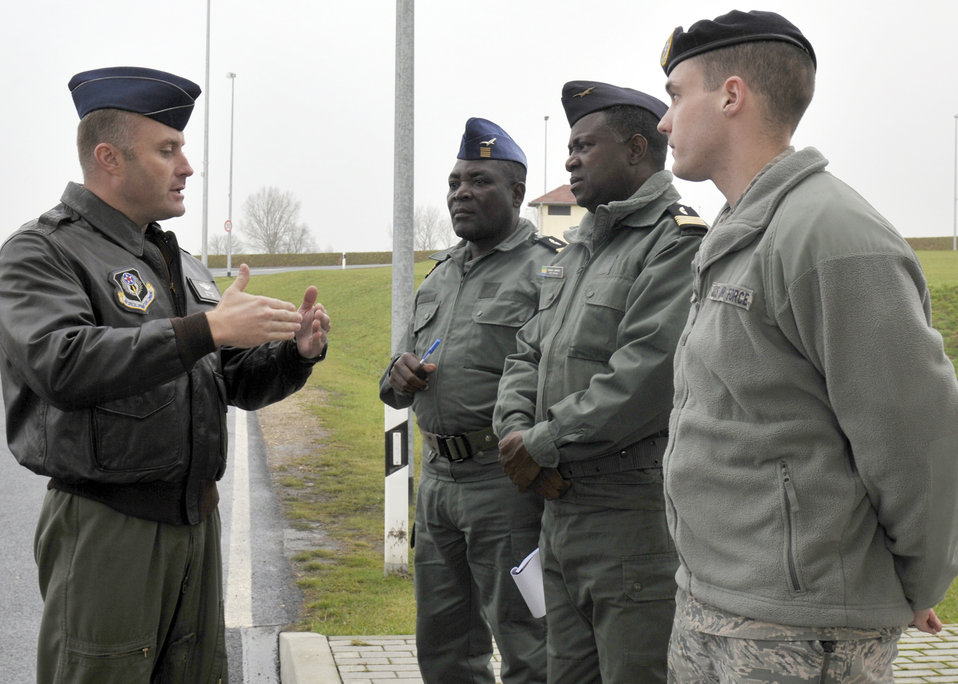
Gabon airmen visit 17th AF

Lt. Col. Jack Aalborg, the Libreville Gabon attach?, translates a briefing given by Senior Airman Dayton Riter to Gabon air force Col. Jean-Francois Asseko Bekogo (right) and Gabon air force Col. Jean Paulin Makoka (left) Jan. 19, 2011, at Ramstein Air Base, Germany. 17th Air Force officials hosted a security familiarization tour for the two Gabonese commanders to show how Air Force bases function on a unit level. Airmen Ritter is from the 52nd Security Forces Squadron. Colonel Asseko is the commander of Mvengue Air Force Base and Colonel Makoka is the commander of Libreville Air Force Base.